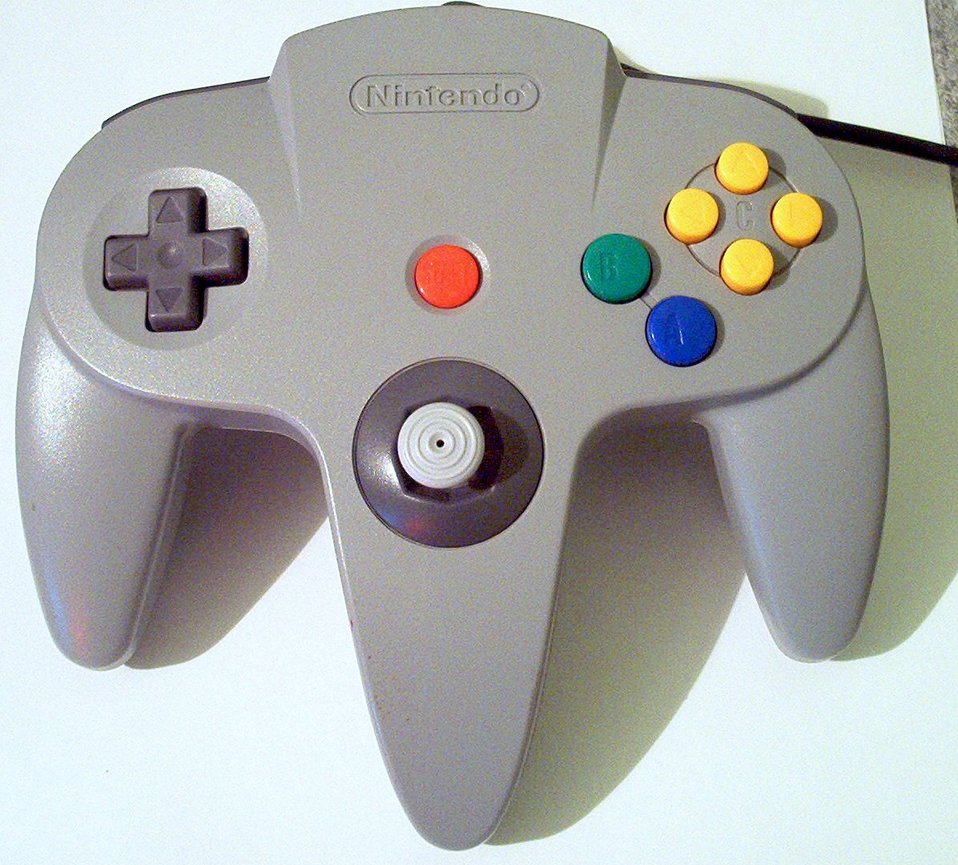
N64-controller-white